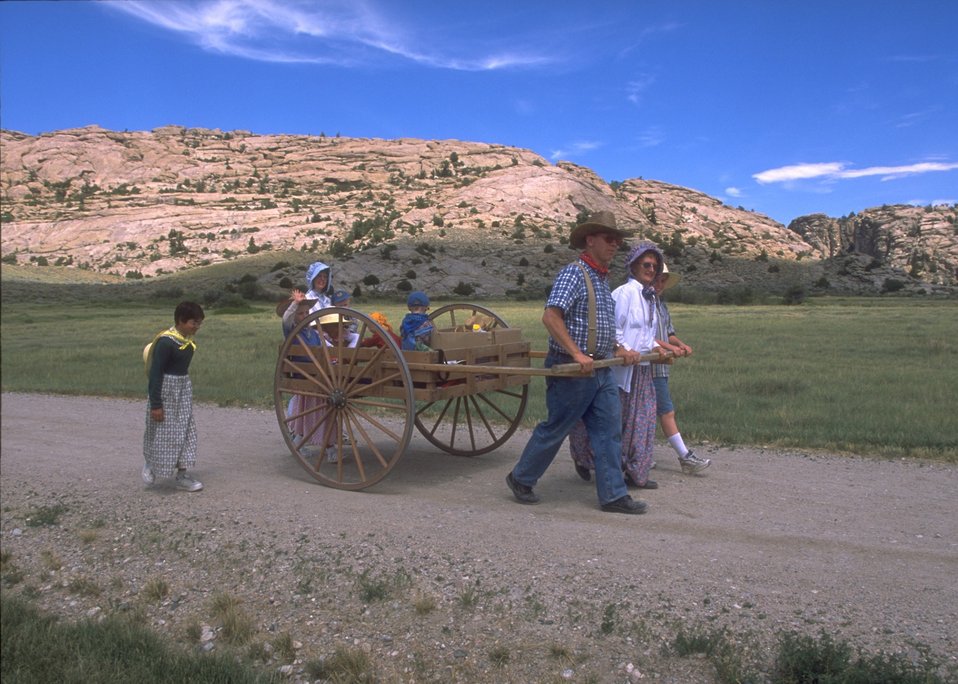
Handcart re-enactment on the Mormon Trail between Devil's Gate and Martin's Cove, Rawlins Field Office.